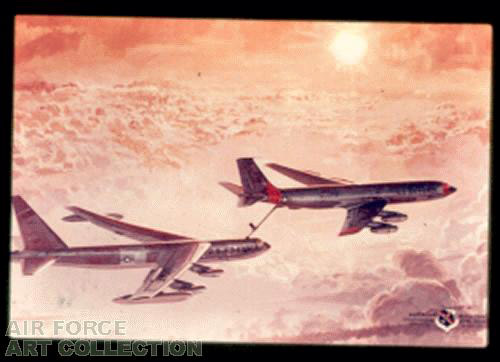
Heritage to Horizons: Air Force documents history through art

This 1963 painting by artist Keith Ferris, entitled